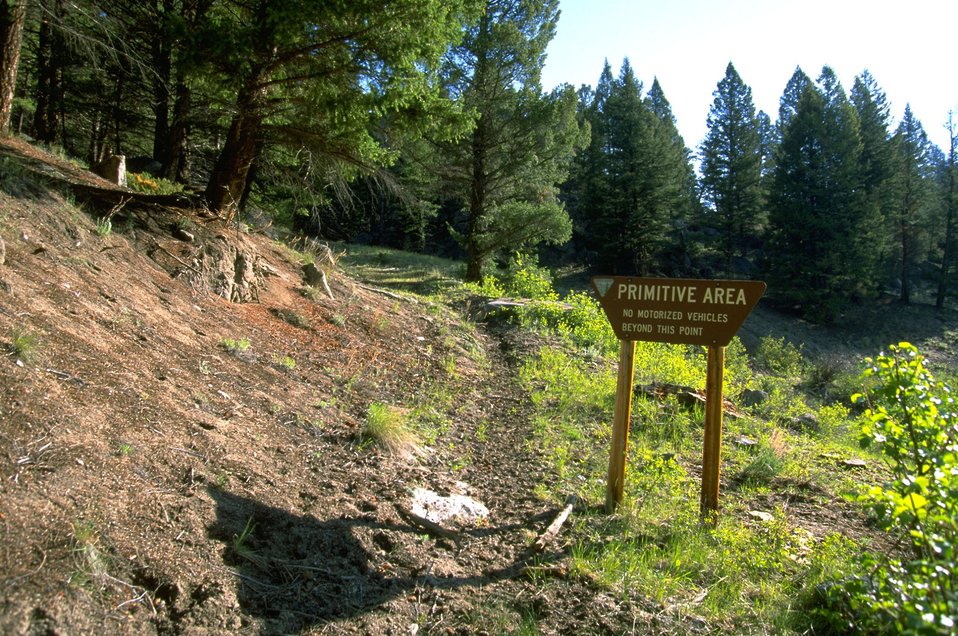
Primitive Area Sign and trail